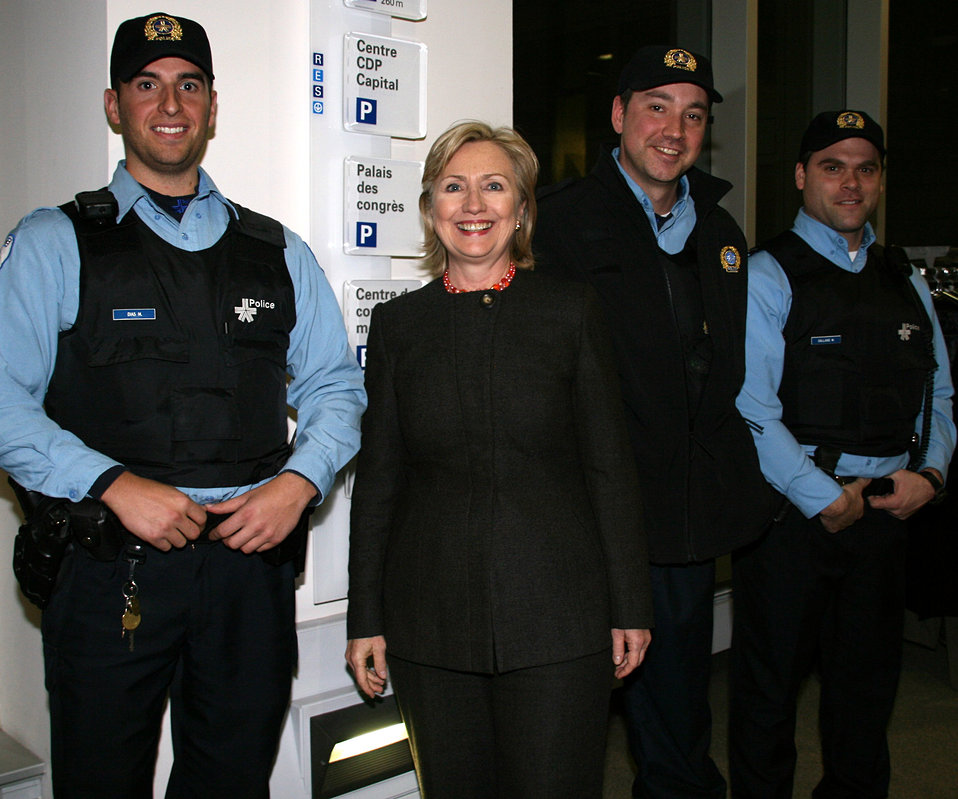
Secretary Clinton in Montreal

U.S. Secretary of State Hillary Rodham Clinton poses with Montreal police, in Montreal, Canada January 25, 2010.